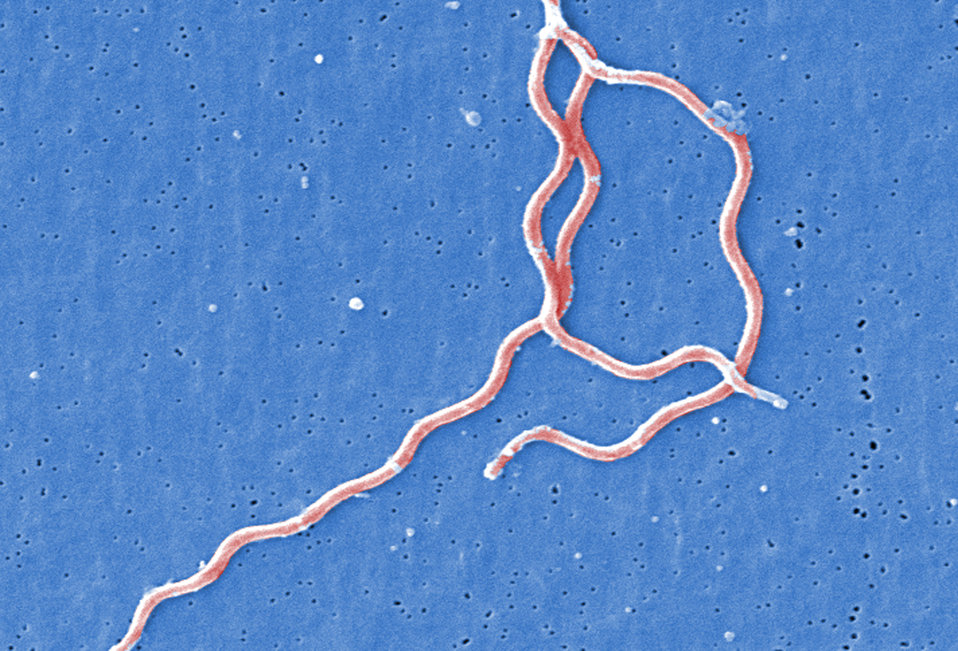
Under a high magnification, this digitally-colorized scanning electron micrograph depicts three Gram-negative, anaerobic, Borrelia burgdorferi bacteria, which had been derived from a pure culture.